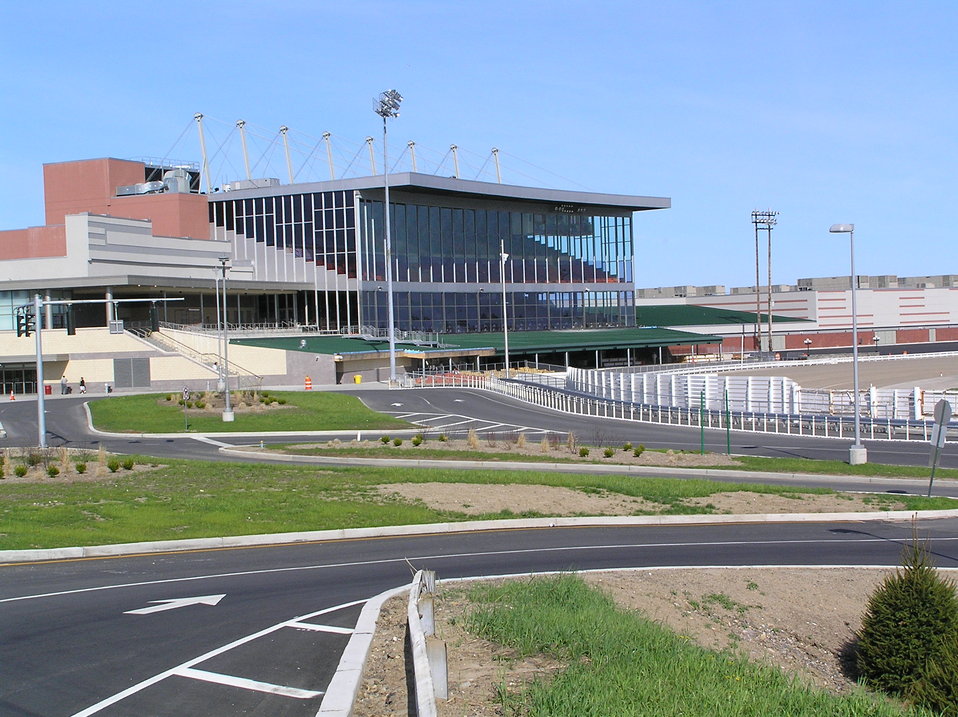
I took this photograph of Yonkers Raceway from exit of New York State Thruway.